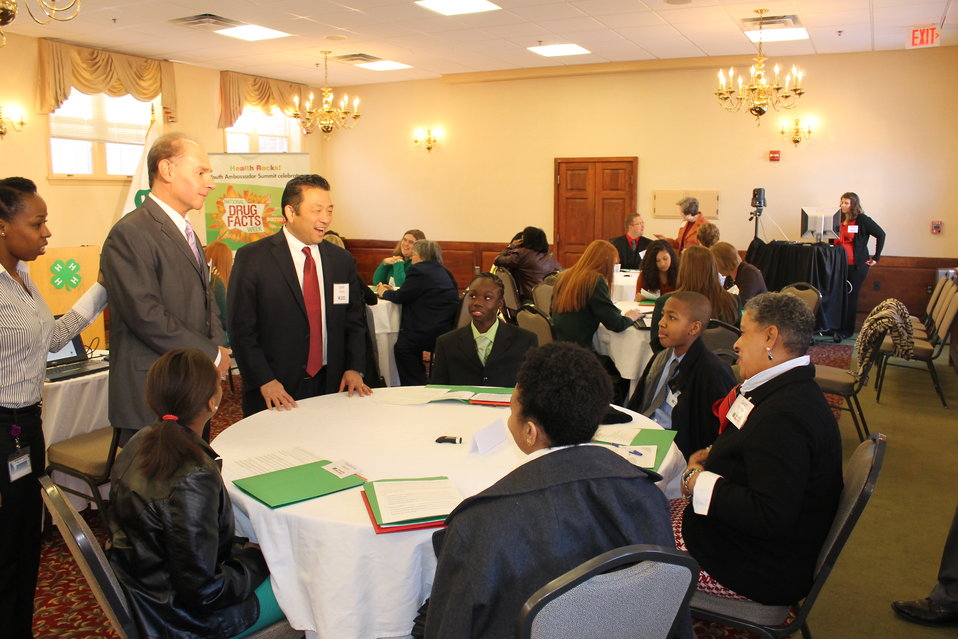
4H